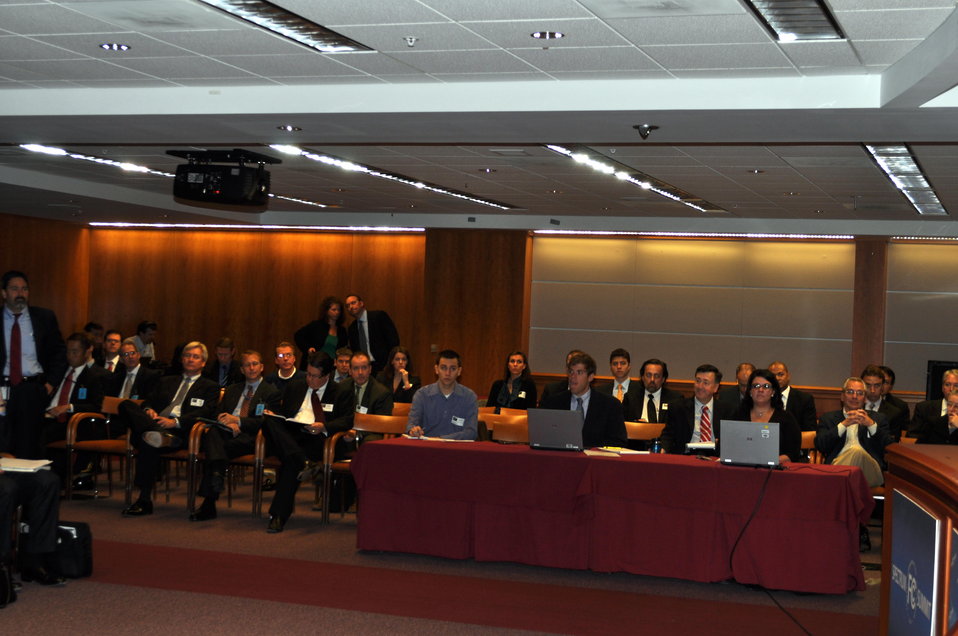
Spectrum Summit